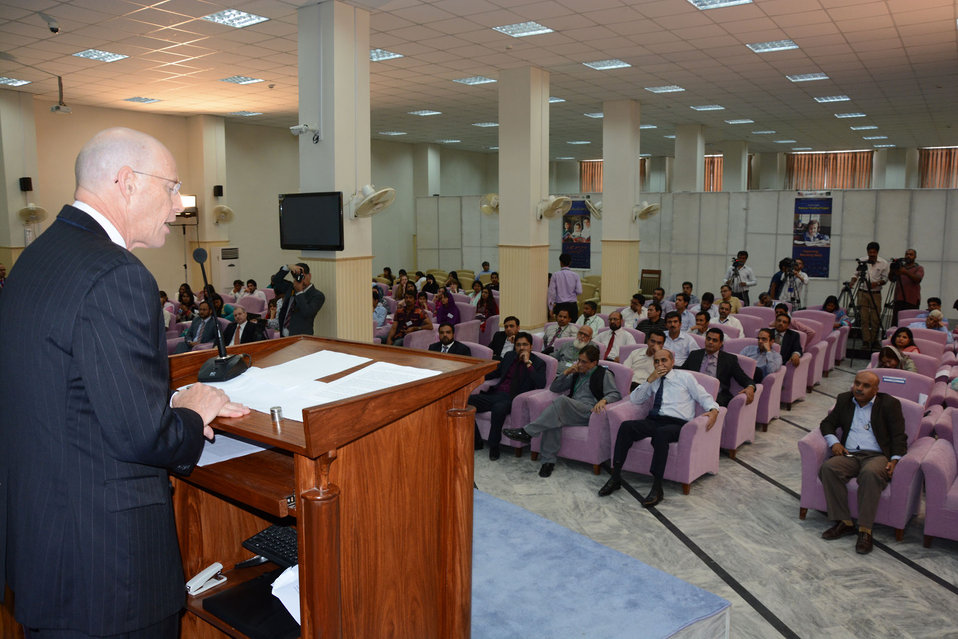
IIUI Teacher Education Scholarships 03